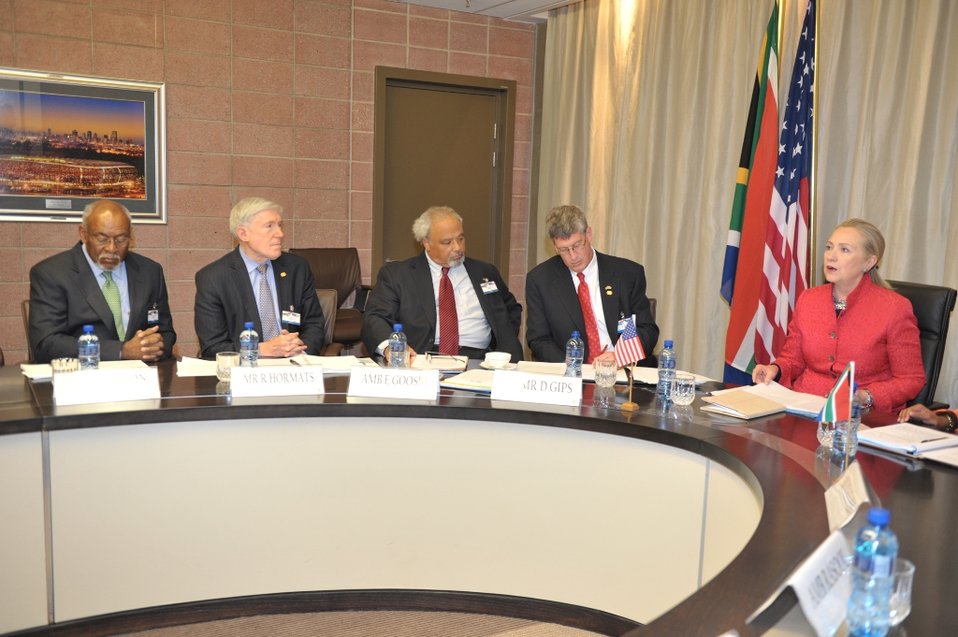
Secretary Clinton Meets With South African International Relations and Cooperation Minister Nkoana-Mashabane

U.S. Secretary of State Hillary Clinton meets with South African International Relations and Cooperation Minister Maite Nkoana-Mashabane for the second meeting of the South Africa-United States of America Strategic Dialogue in Pretoria, South Africa, on August 7, 2012.